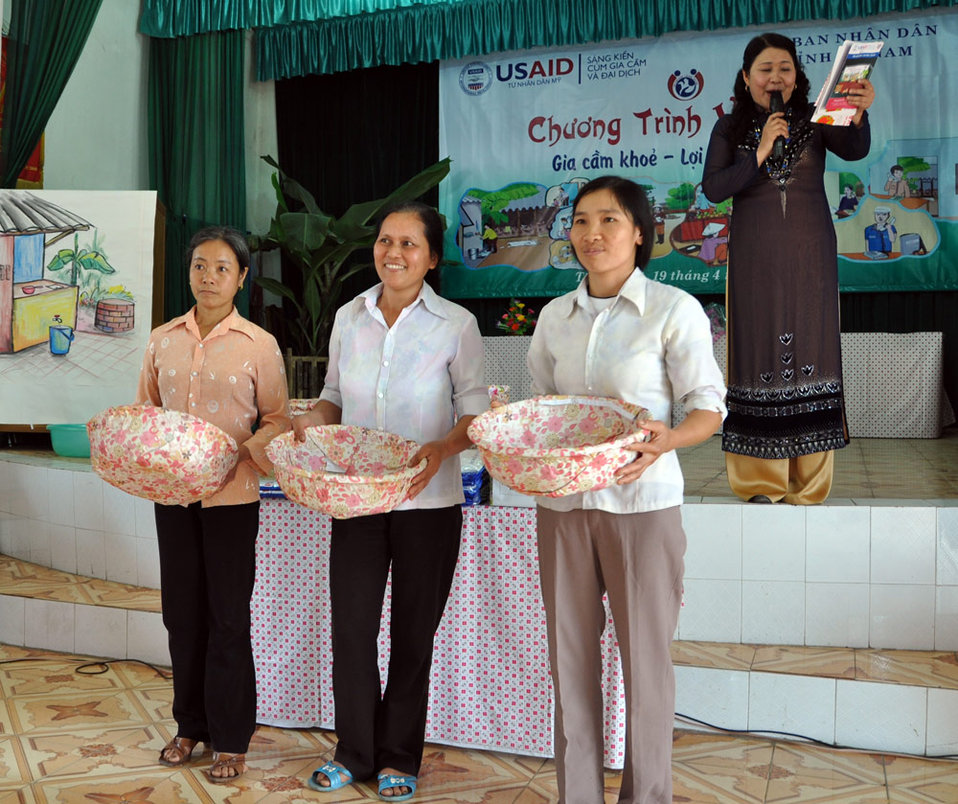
Residents in Vietnam's Tien Ngoai Commune, Duy Tien District, Ha Nam Province, discuss ways to prevent and control avian and pandemic influenza.